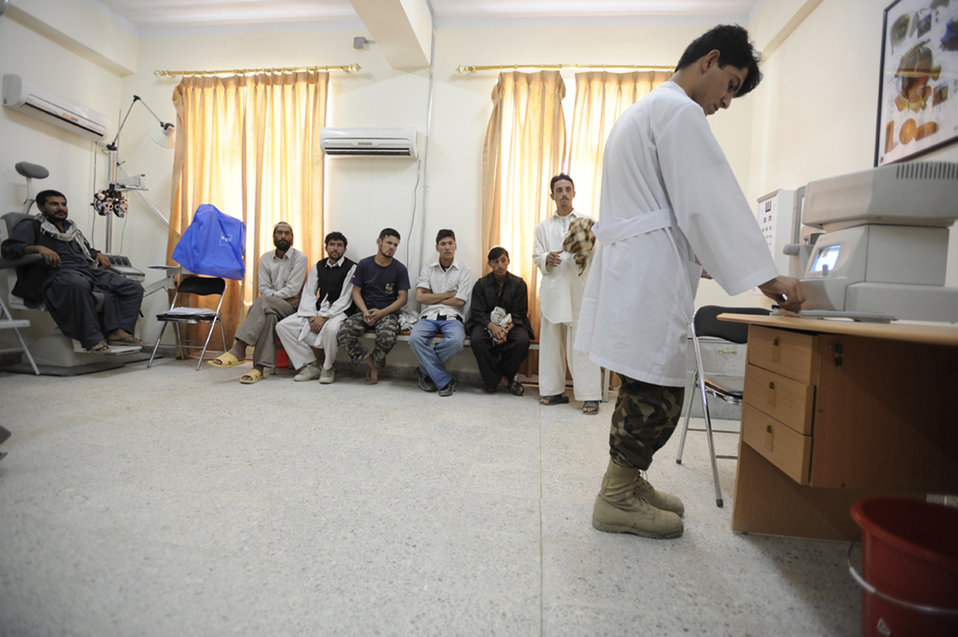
Airmen advise Afghan medical mission

Recruits for the Afghan national army wait to have their vision screened during medical inprocessing Aug 2, 2009 at the Kabul military training center, Afghanistan. The medical screening process consists of a drug urinalysis, physical screening and eye exam.